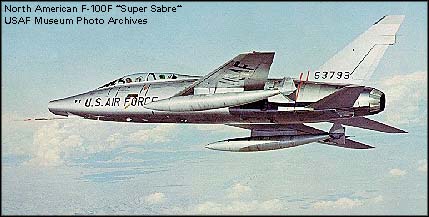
F-100 Super Sabre

1950's -- F-100 Super Sabre. Courtesy photo.